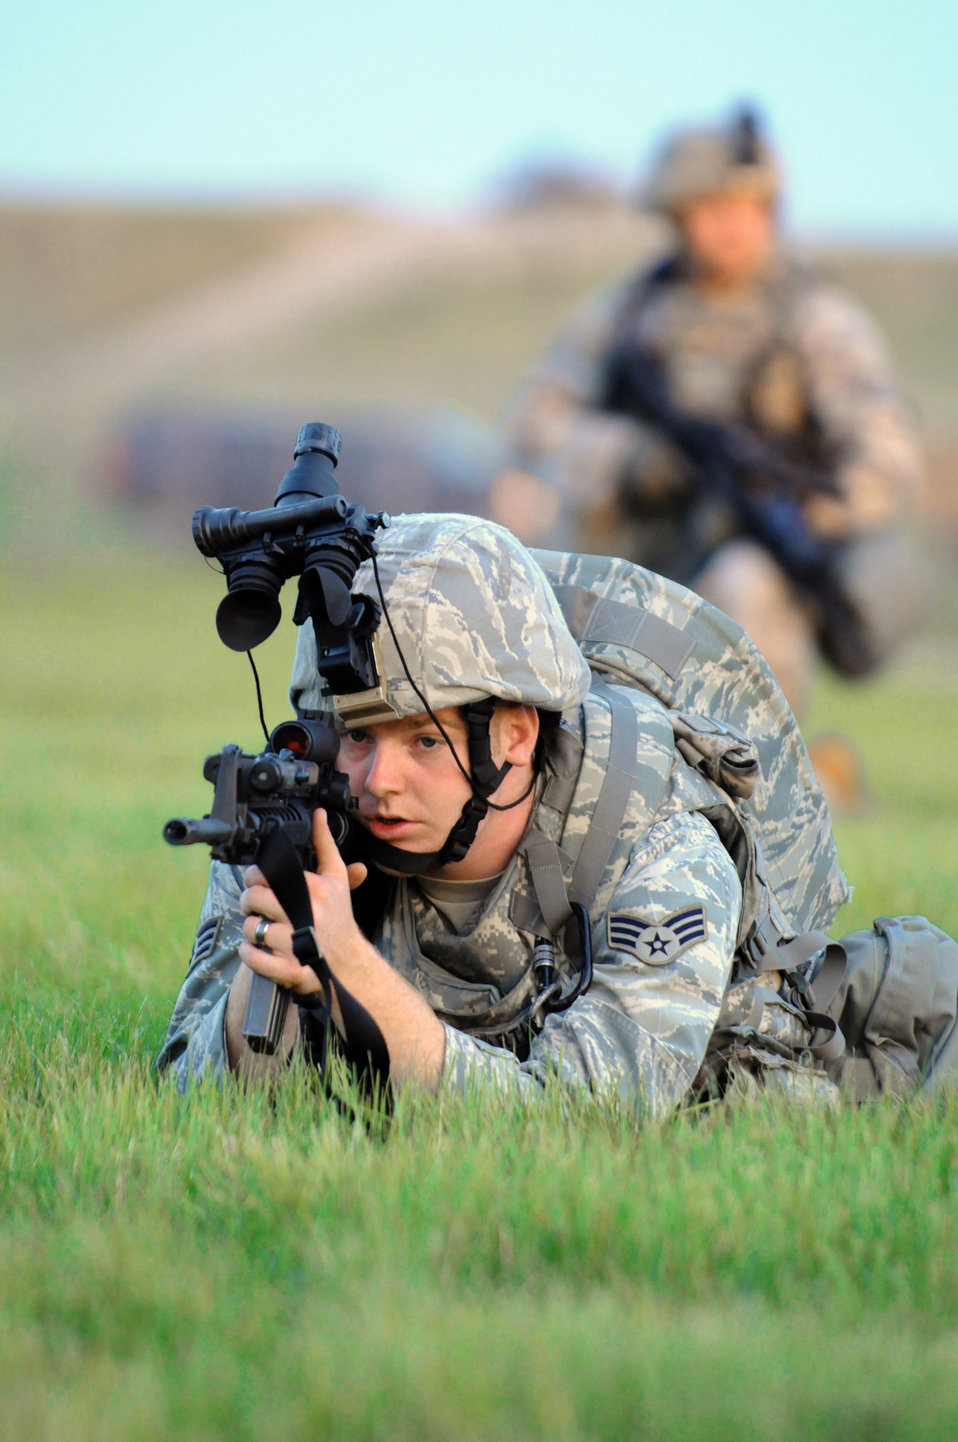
Gotcha!

Senior Airman Matthew Hartley takes aim June 4, 2011, during an exercise at F.E. Warren Air Force Base, Wyo. Airman Hartley is assigned to the 790th Missile Security Forces Squadron.